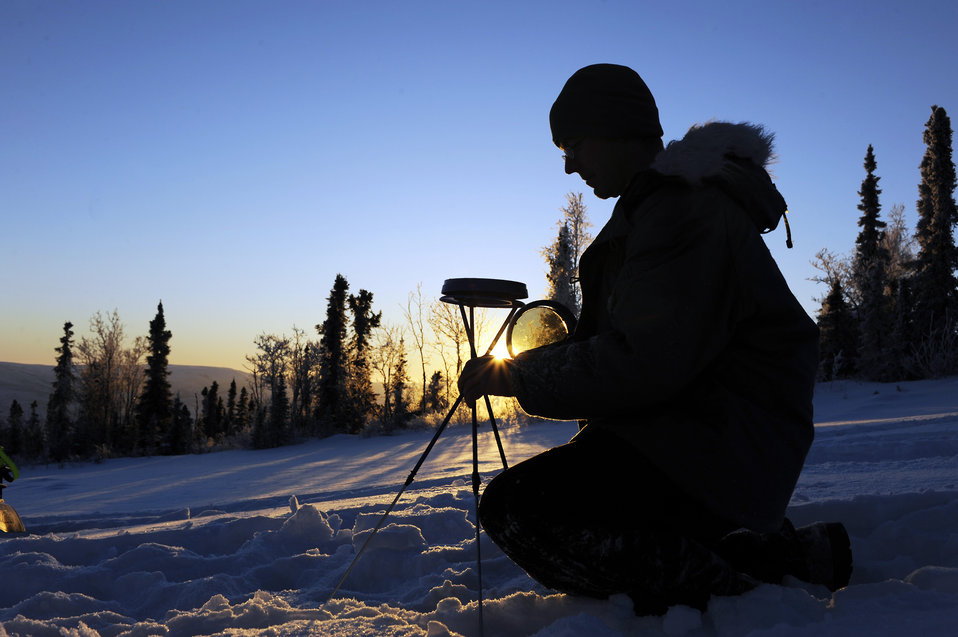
Eielson Airmen research alternative energy resources

Staff Sgt. Stewart Raring adjusts the solar pathfinder to see an accurate reading Dec. 16, 2008, at a remote operating facility in Alaska. A solar pathfinder shows the year-round, site-specific solar data to determine the best location and angle to setup solar panels. Currently Det. 460 members plan on constructing a solar hybrid power system at seven different locations replacing their current propane power source saving more than $100,000 in maintenance and refueling over a five-year period. He is assigned to Det. 460 at Eielson Air Force Base, Alaska.